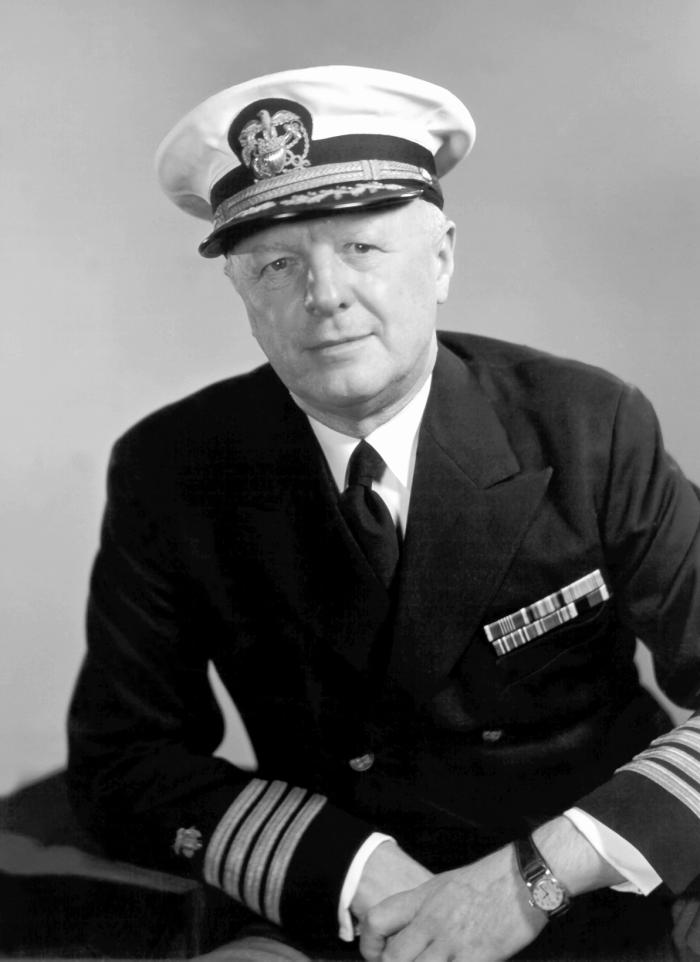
This is a photograph of H. Trendley Dean, D.D.S, who demonstrated the benefits of fluoride within dentistry.